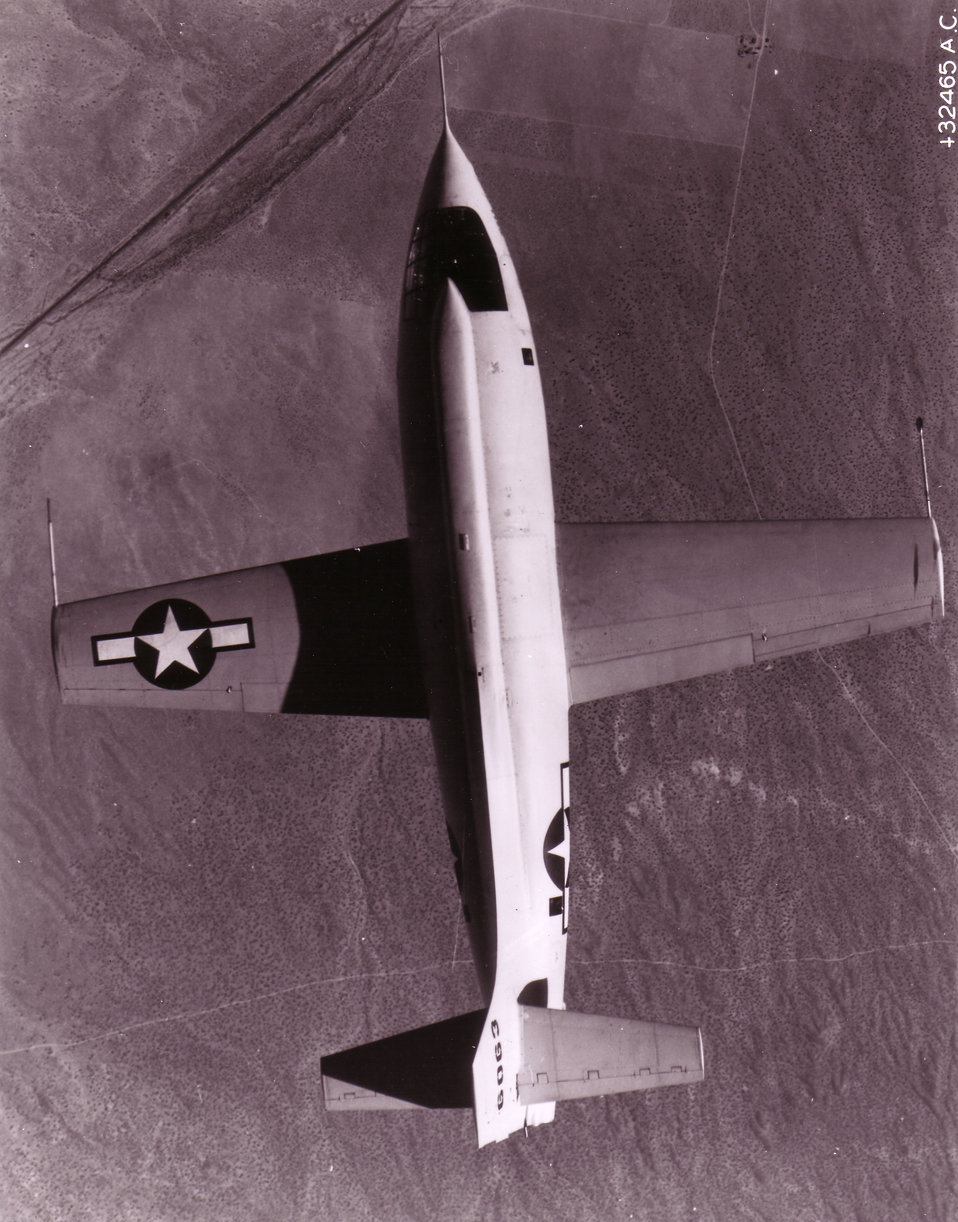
Bell X-1

1940's -- Bell X-1 became the first airplane to fly faster than the speed of sound. Piloted by U.S. Air Force Capt. Charles E.